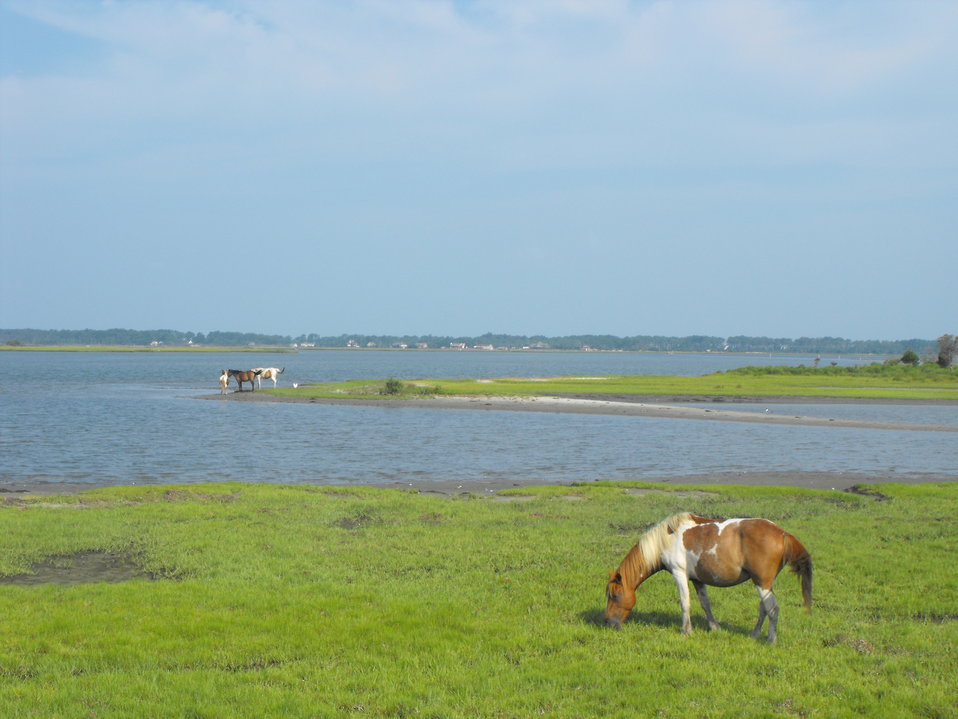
Chincoteague ponies grazing off the Service Road at Chincoteague National Wildlife Refuge / Assateague Island National Seashore.